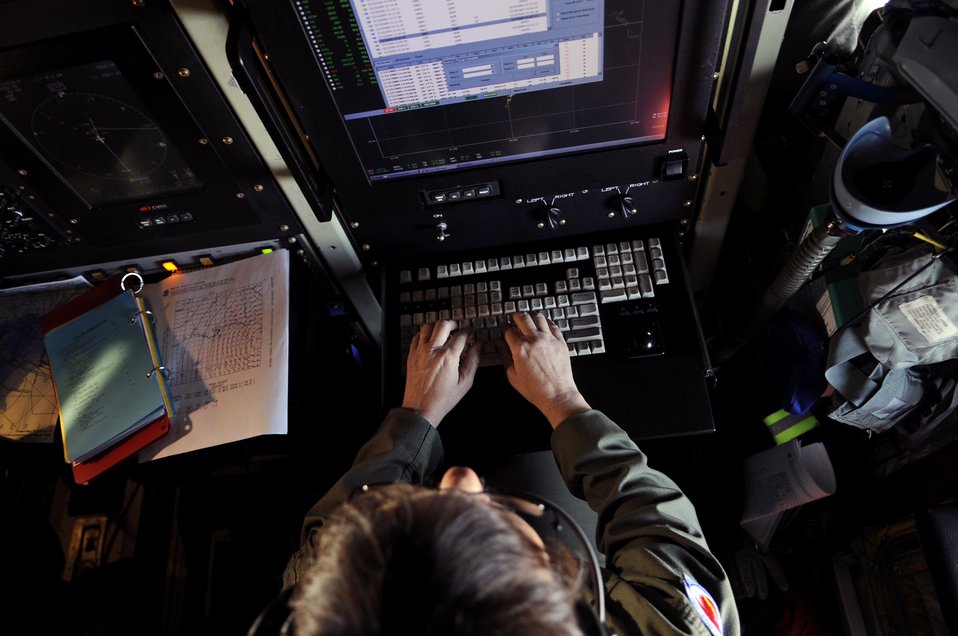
Bloggers Flight with the Hurricane Hunters

Lt. Col. Val Hendry, onboard a WC-130J